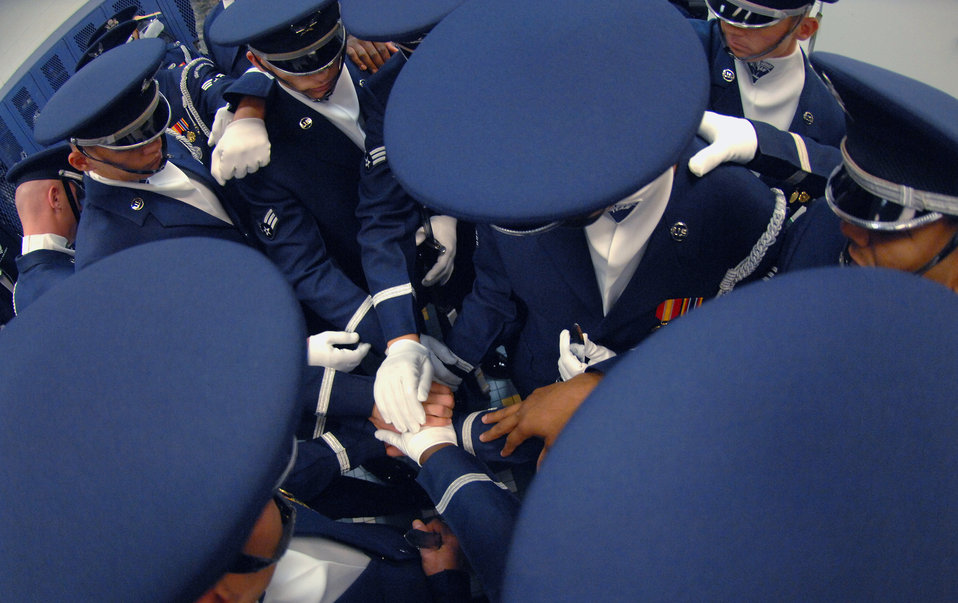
Getting ready for the show

U.S. Air Force Honor Guard Drill Team Airmen gather for a word of prayer Nov. 6 before their performance at the Palo Verde High School gym in Las Vegas, Nev. The drill team was in Las Vegas for 14 performances throughout the military and civilian community.